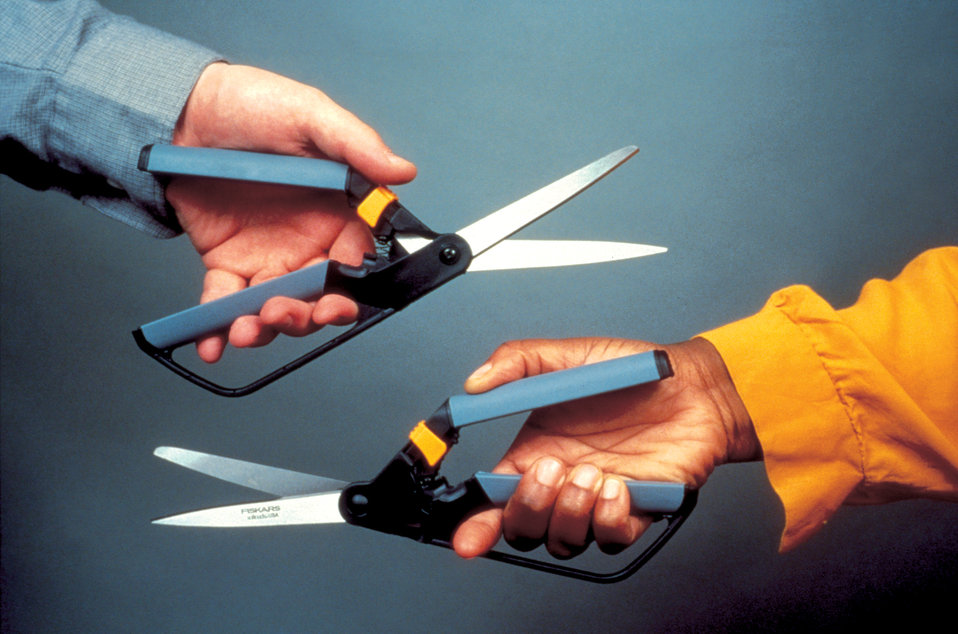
Manufactured by Fiskars�, these 'ambidextrous' scissors depicted in this 1996 photograph were unlike other scissors, for they were designed to be used by people who were left, or right handed. Note that the hands holding these scissors represent a right-handed, and a left-handed user. They also employed a spring that would open the scissors automatically, thereby, allowing for a variety of interchangeable hand grips. This cutting implement could accommodate very large hands as well, which increased the usability comfort range. However, the cost for these 'customized' scissors was higher than their unmodified counterparts.